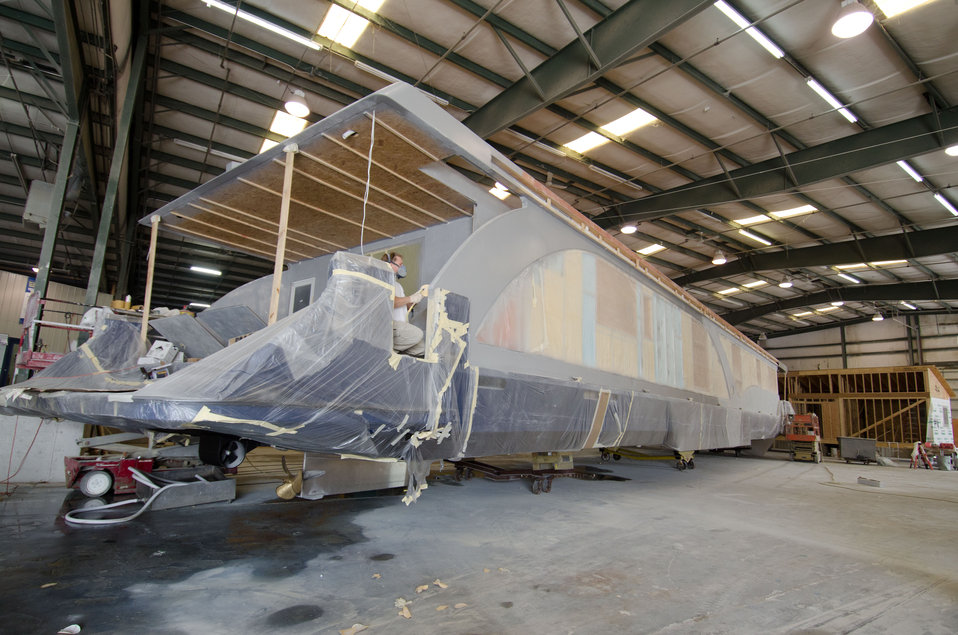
Stardust Industries craftsmen use their expertise in luxury houseboats to help retool and redirect Monticello, Kentucky’s houseboat manufacturing industry on Wednesday, July 13, 2011 The houseboat industry has been decimated because of the struggling economy – by using its facilities and manpower to create low-cost housing that is energy efficient. Rural Development obligated $499,000 in Rural Business Enterprise Grant funds to support this unique endeavor. Up until a few years ago, there were several successful houseboat manufacturers in the four-county area surrounding the city of Somerset. Most have now ceased operation or drastically reduced output, which has led to dramatic, long-term job loss. These new energy efficient homes will be constructed in redesigned, refitted houseboat factories using local workers that have been retrained.